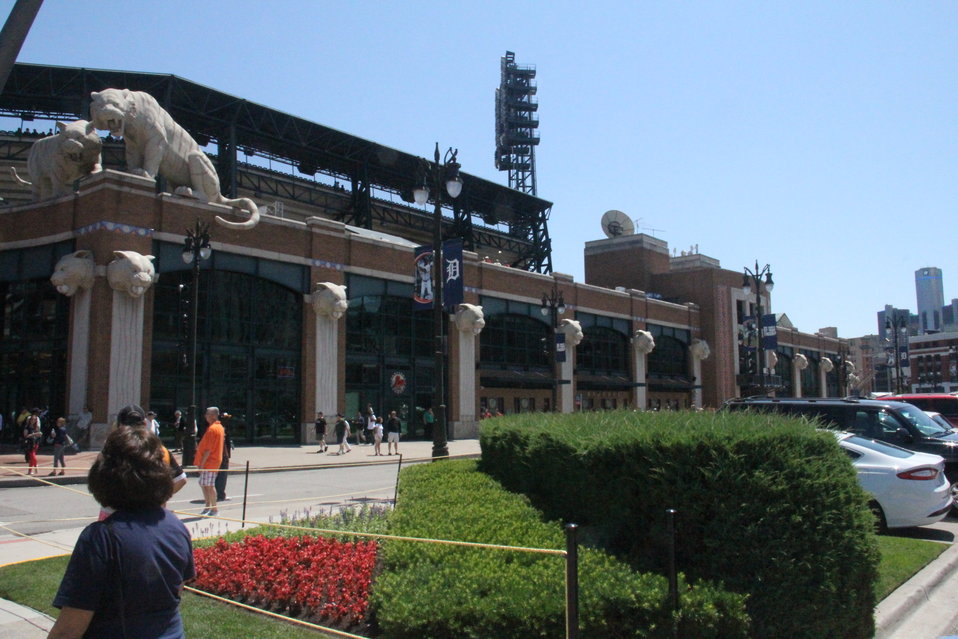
Statues